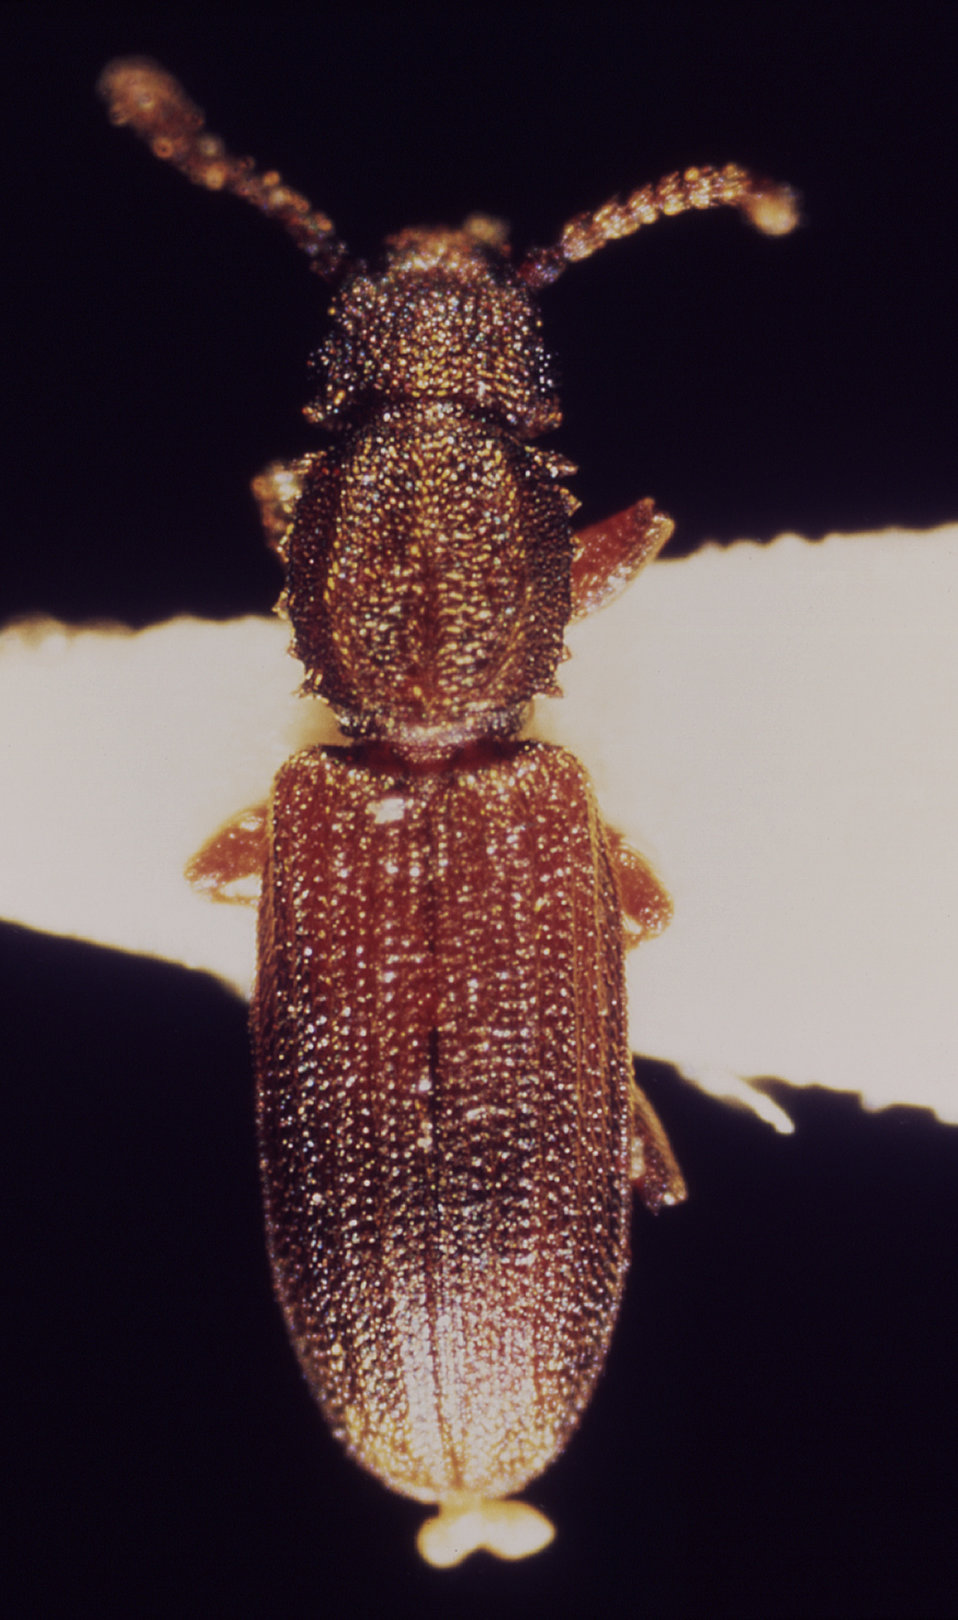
This is a dorsal view of a Oryzaephilus surinamensis otherwise known as a 'sawtoothed grain beetle'; Mag. 7.1X.